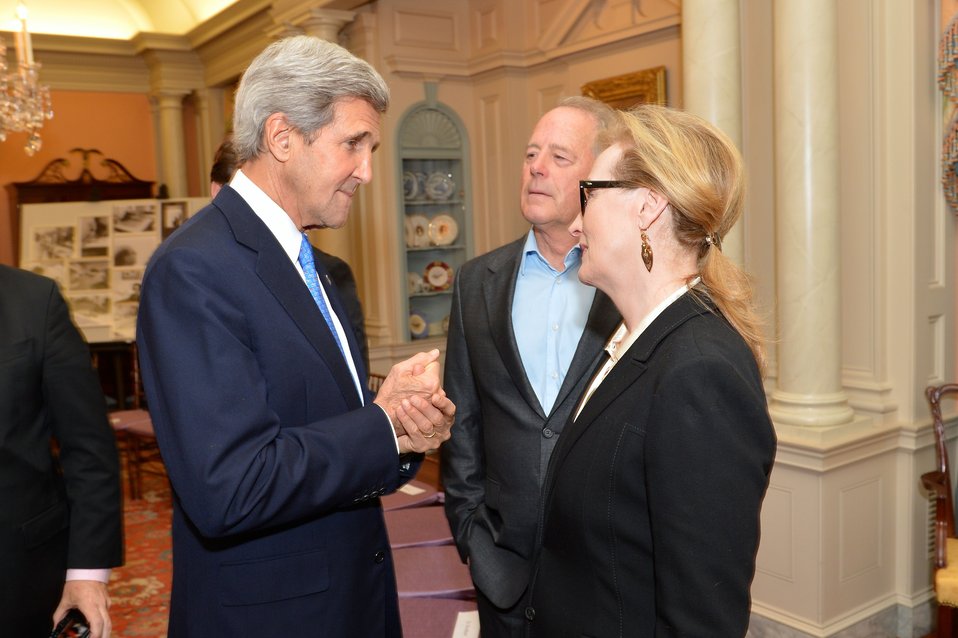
Secretary Kerry Speaks With American Actress Meryl Streep

U.S. Secretary of State John Kerry speaks with American Oscar-winning actress Meryl Streep at the Foundation for Art and Preservation in Embassies (FAPE) Dinner at the U.S. Department of State in Washington, D.C., on May 7, 2014.